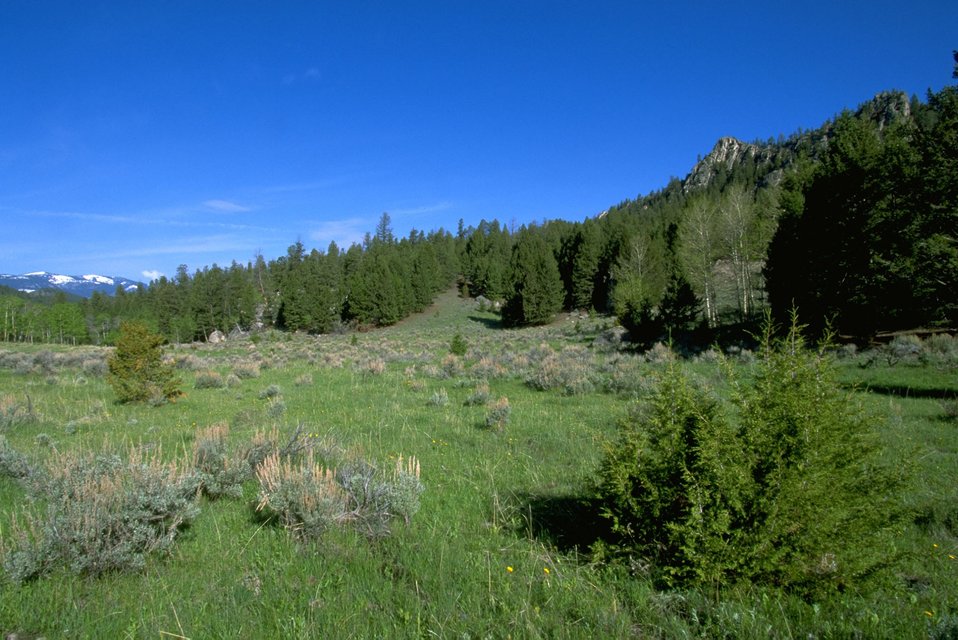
Sagebrush and trees in a meadow with snowy mountain in the background